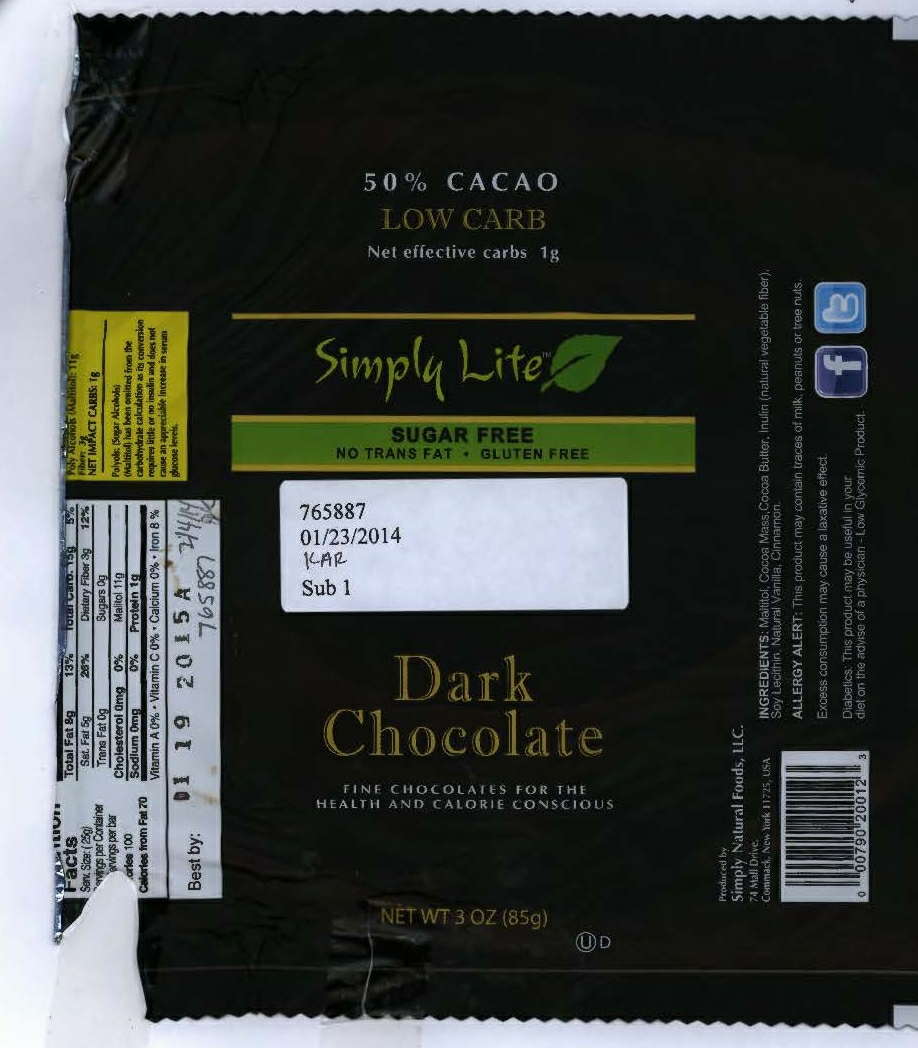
RECALLED - Chocolate Label 2

March 17, 2014 – Product Recall – Simply Natural Foods of Commack, N.Y., has agreed to recall Simply Lite brand 50% Cacao Low Carb Sugar Free Dark Chocolate 3-ounce bars bearing the lot codes “Best By: 01 18 2015A” or “Best By: 01 19 2015A” on the back of the packaging. FDA testing of some of the bars has found that they contain milk protein. Milk is a major food allergen and can cause mild to life-threatening reactions in allergic individuals.